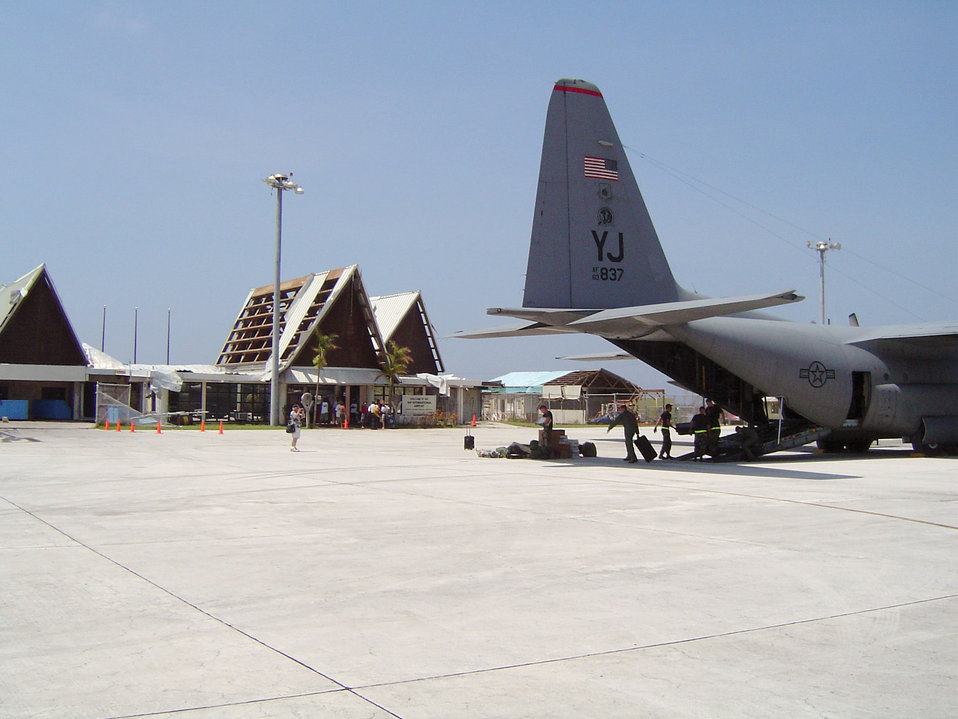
Typhoon Sudal

CAROLINE ISLANDS, Micronesia -- Typhoon Sudal devastated the island of Yap on April 10, destroying trees, homes and shutting down the island's infrastructure. Crews from Yokota Air Base, Japan, supported relief efforts to the island by delivering 31 passengers and 102.4 short tons of cargo out of Andersen AB, Guam.